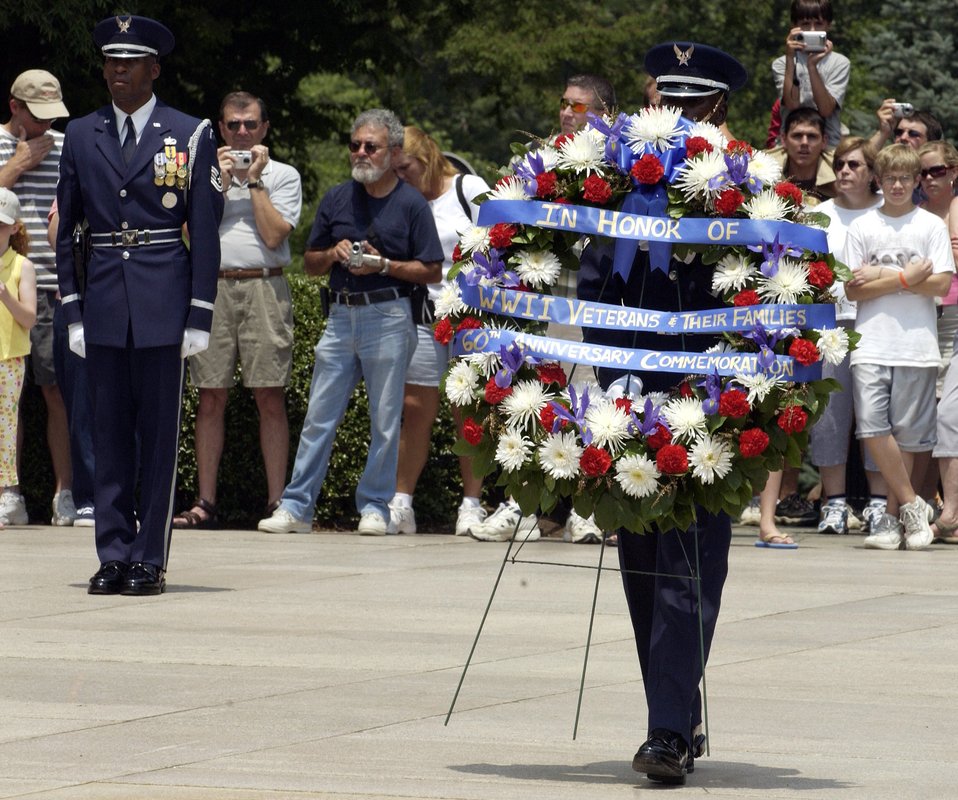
WWII 60th Anniversary Airpower Commemoration Wreath Laying ceremony

WASHINGTON -- A member of the U.S. Air Force Honor Guard bears a wreath which Air Force Chief of Staff Gen. John P. Jumper, Ms. Toby Felker and retired Air Force Lt. Col. William Czabaranek placed at Arlington National Cemetery's Tomb of the Unknowns June 30 during a ceremony commemorating airpower and the 60th anniversary of World War II.